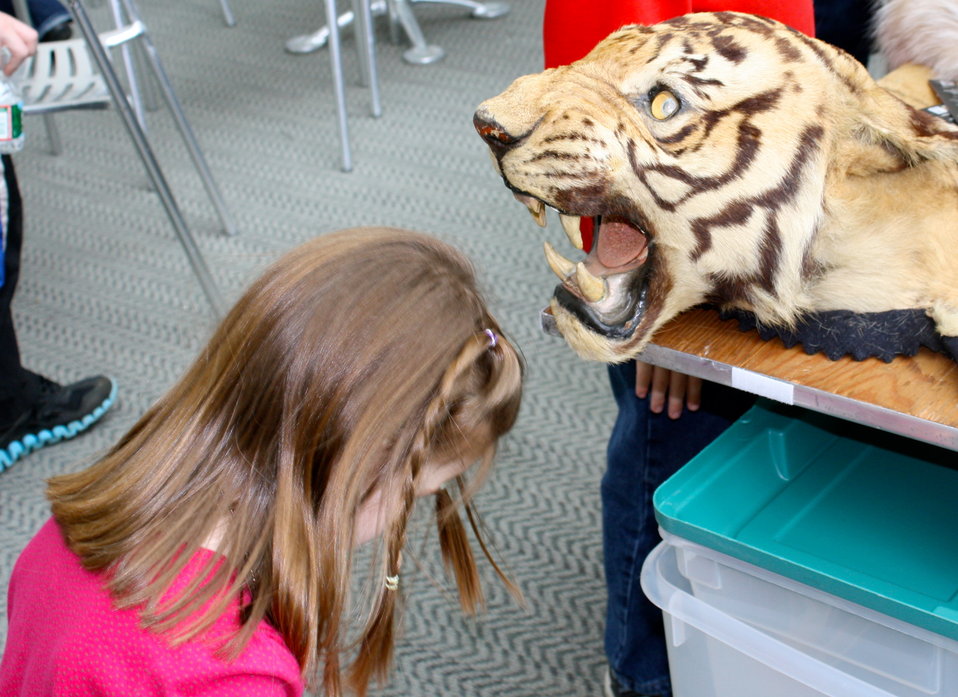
Luckily it's stuffed